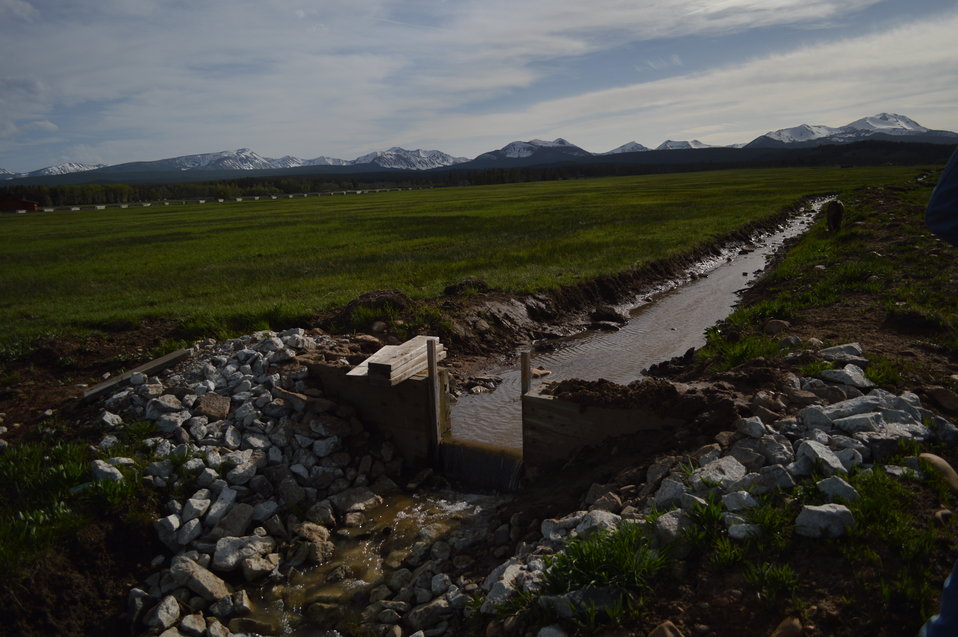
Regional Leadership Visit to Montana 2014